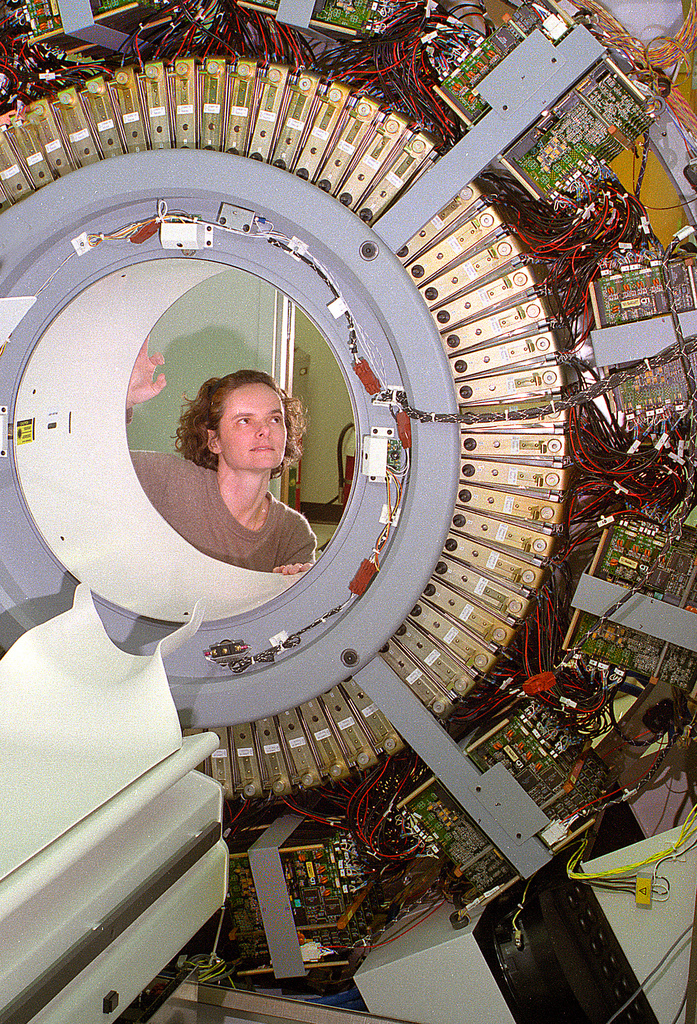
Positron Emission Tomography (PET) is a medical imaging method which uses a PET camera to measure the concentration and movement of a radiotracer in the living body.

Over the past 30 years, PET research at Brookhaven has focused in the integration of basic research in radiotracer chemistry with the tools of neuroscience to develop new scientific tools for applications in human health.